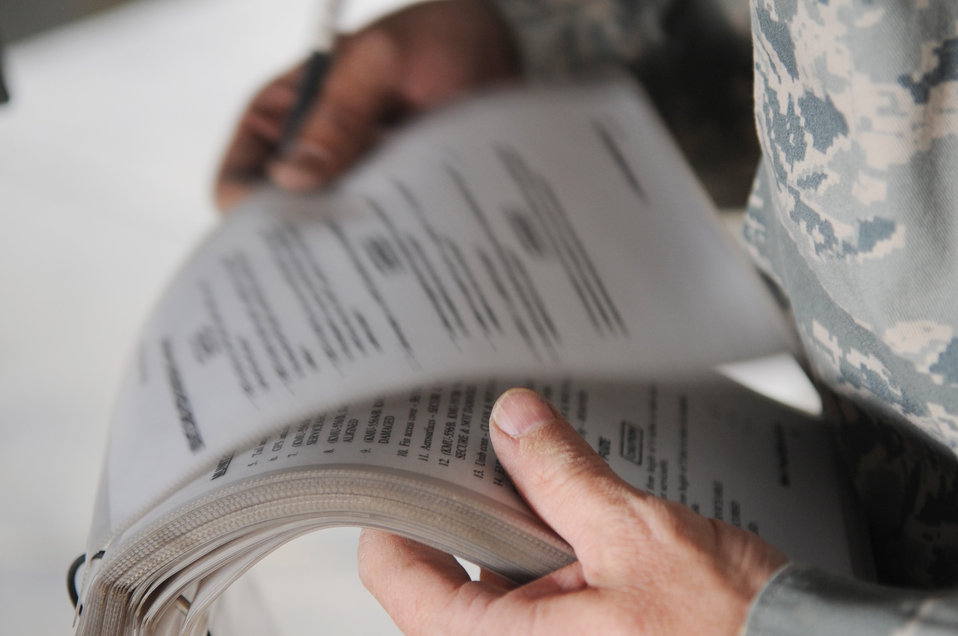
Weapons loaders arm jets for the fight

Tech. Sgt. Brett Kitzman reviews a checklist before loading munitions onto an F-16 Fighting Falcon June 29 at Joint Base Balad, Iraq. Sergeant Kitzman is a 332nd Expeditionary Aircraft Maintenance Squadron weapons loader. He is deployed from Buckley Air Force Base, Colo., and is a native of Aurora, Colo.